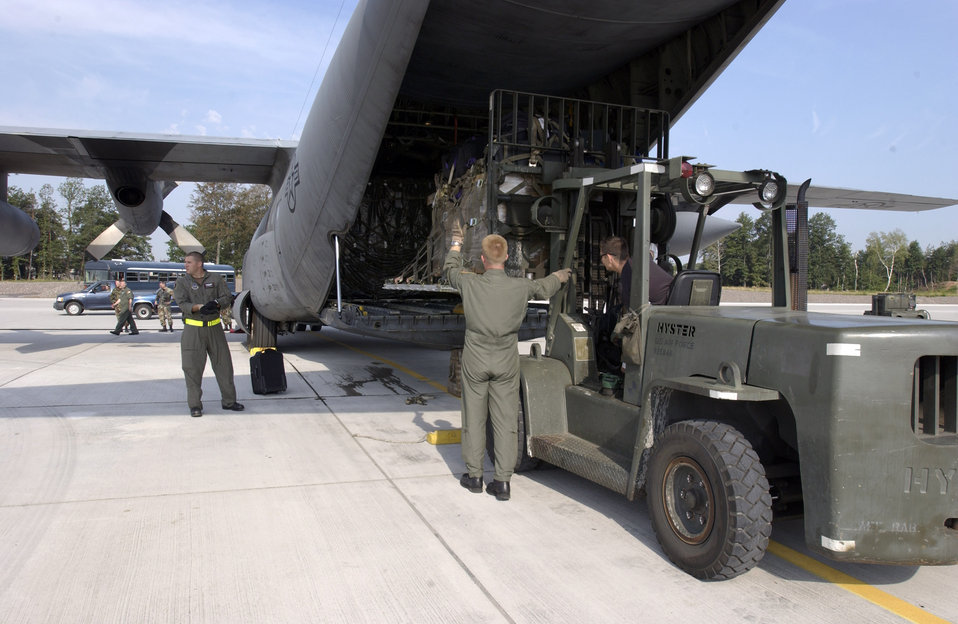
Assisting Americans

Humanitarian supplies are loaded on an aircraft at Ramstein Air Base, Germany, on July 19. The supplies are destined for Americans who have left Lebanon for Cyprus.